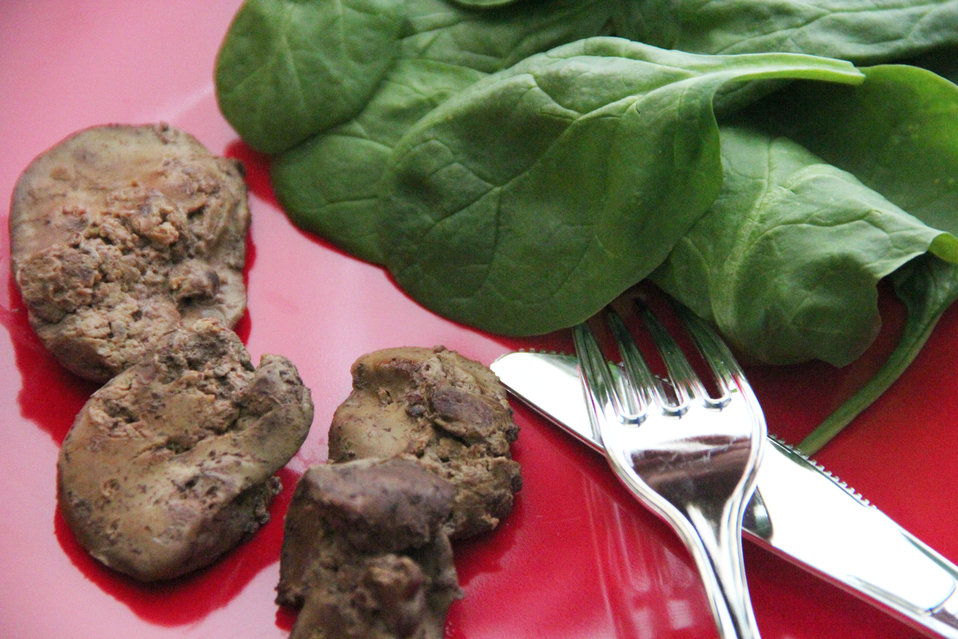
This image depicts a bright red ceramic plate atop which was set a portion of uncooked, thoroughly-washed spinach leaves, adjacent to which three pieces of cooked beef liver had been placed. See PHIL 14813, for an image depicting this cooked liver in its raw state.